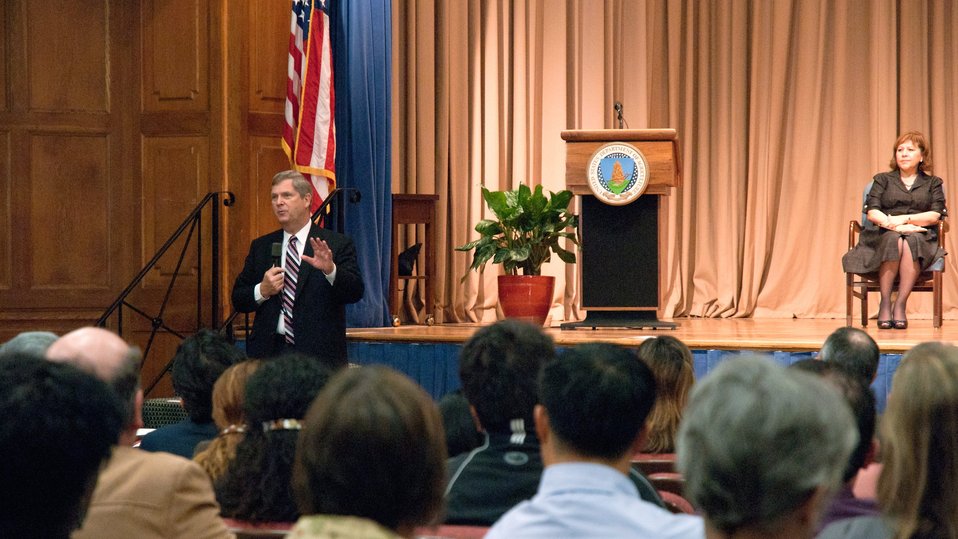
Agriculture Secretary Tom Vilsack took the floor to speak with those in attendance at the National Hispanic Heritage Month observance by the United States Department of Agriculture (USDA), in the Jefferson Auditorium, in Washington, D.C. on Thursday, September 15, 2011.